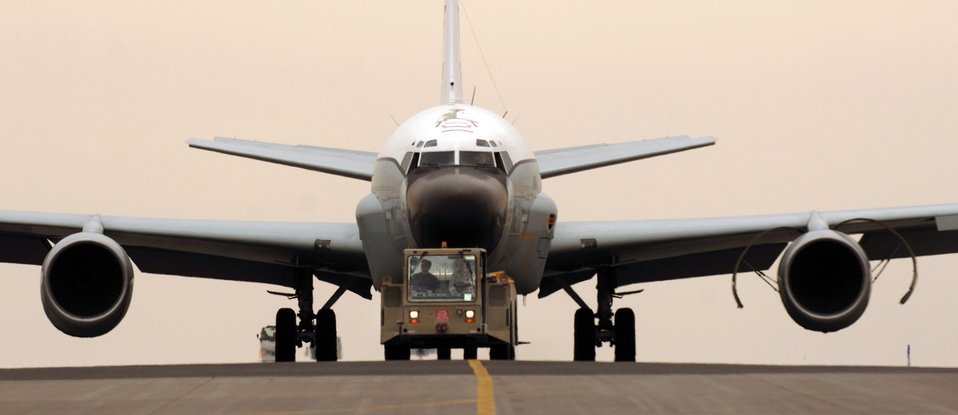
Maintainers turn Rivet Joint

An RC-135 Rivet Joint reconnaissance aircraft is towed by Staff Sgt. John Terlaje and Airman 1st Class Ross Vandenbosch in Southwest Asia. The F108-model high bypass turbofan engine, introduced to the 135-airframe in August of 1998, has proven to be a reliable workhorse in transporting the heavy 275,000-pound intelligence and reconnaissance platform. Both crew chiefs are deployed from the 55th Aircraft Maintenance Squadron from Offutt Air Force Base, Neb.